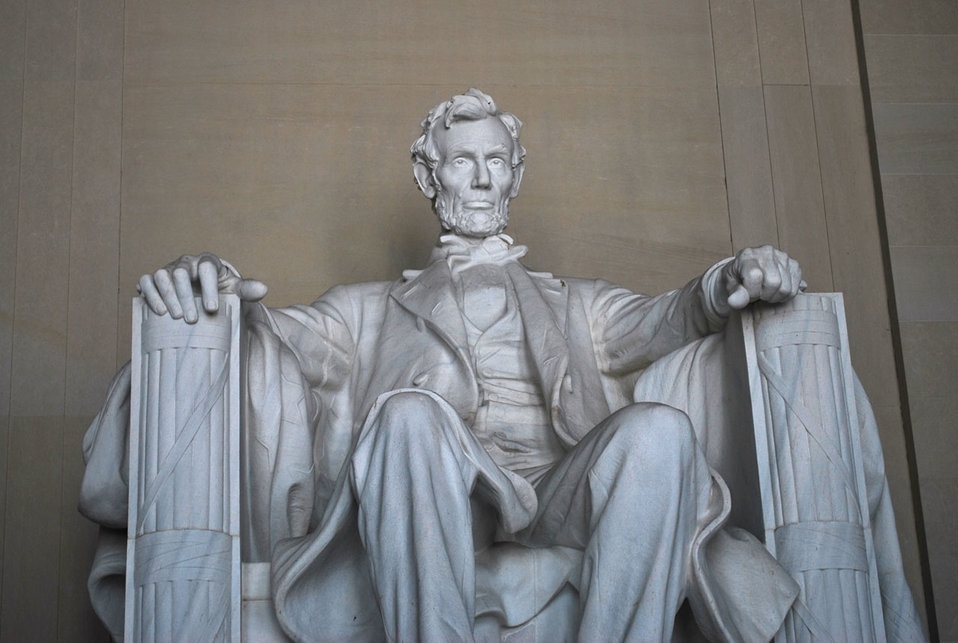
Here's looking at you

Lincoln the man.